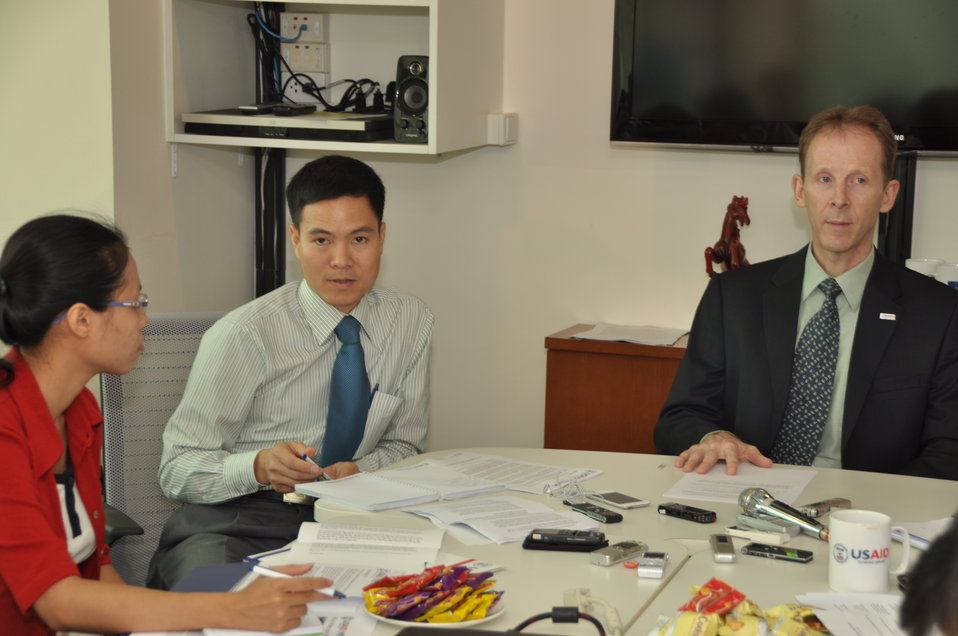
USAID Mission Director Joakim Parker announces climate change awards

October 17, 2012